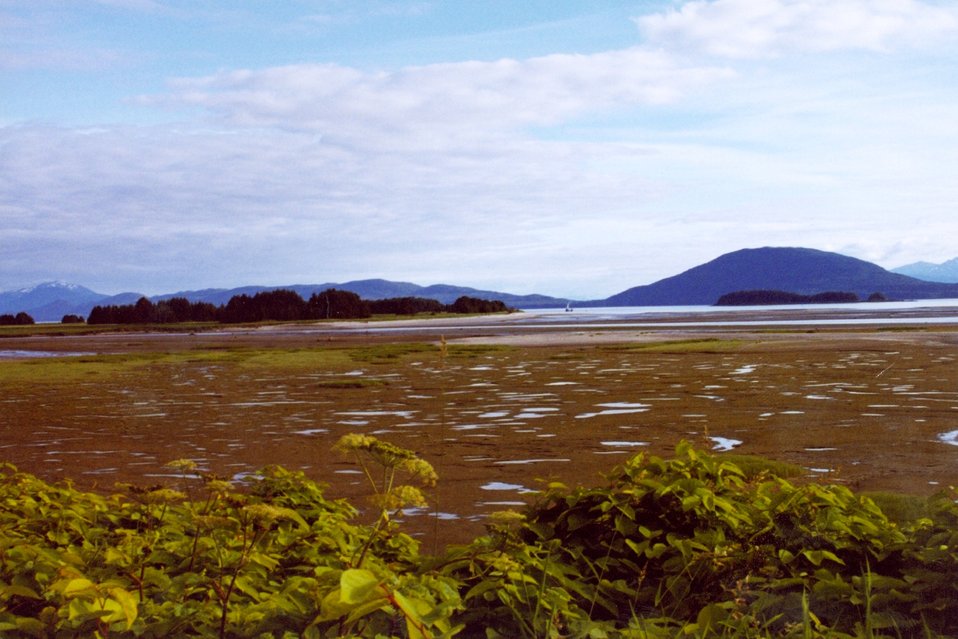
Low tide in a placid bay in Southeast Alaska